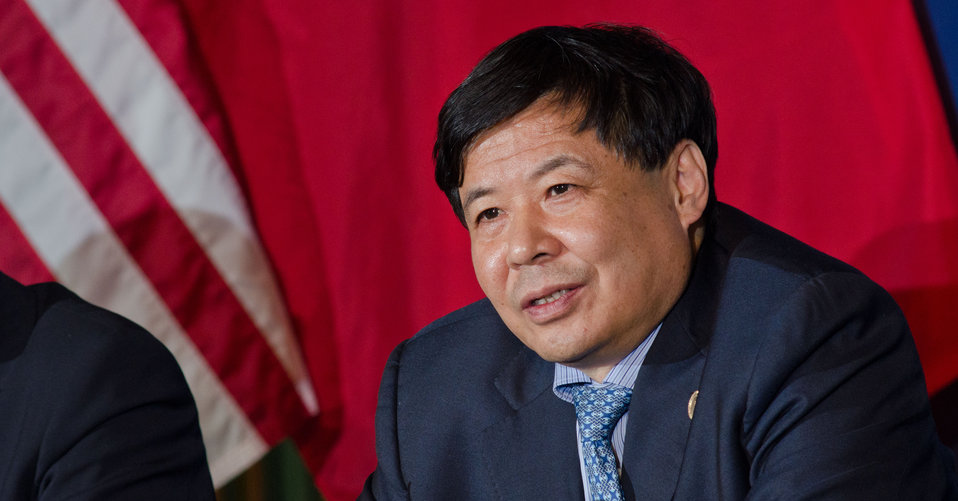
China’s Vice Minister of Finance Zhu Guangyao answers a question from international news media journalists at the 23rd Session of the U.S. China Joint Commission on Commerce and Trade (JCCT) press conference at the Andrew W. Mellon Auditorium in Washington, D.C. on Wednesday, Dec. 19, 2012. The JCCT holds high-level plenary meetings on an annual basis to review progress made by working groups that focus on a wide variety of trade issues. These working groups meet throughout the year to address topics such as intellectual property rights, agriculture, pharmaceuticals and medical devices, information technology, tourism, commercial law, environment, and statistics.